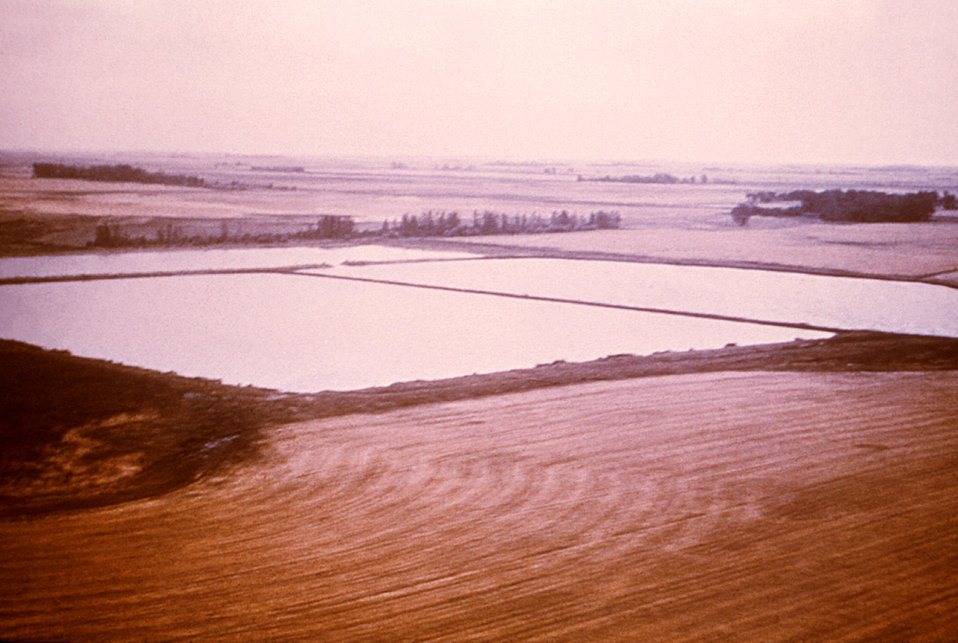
This 1965 photograph depicted an aerial view of a Georgian oxidation pond, which was a known breeding ground for Culex spp. mosquitoes.